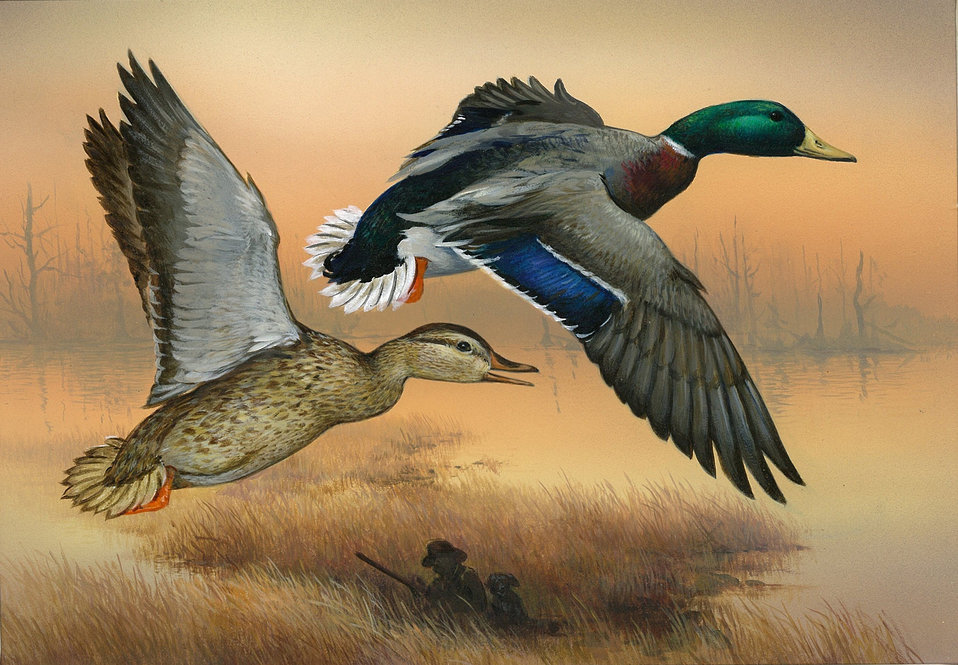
2013 Duck Stamp Contest Submission 198

Art submission for the 2013 Federal Duck Stamp Contest.